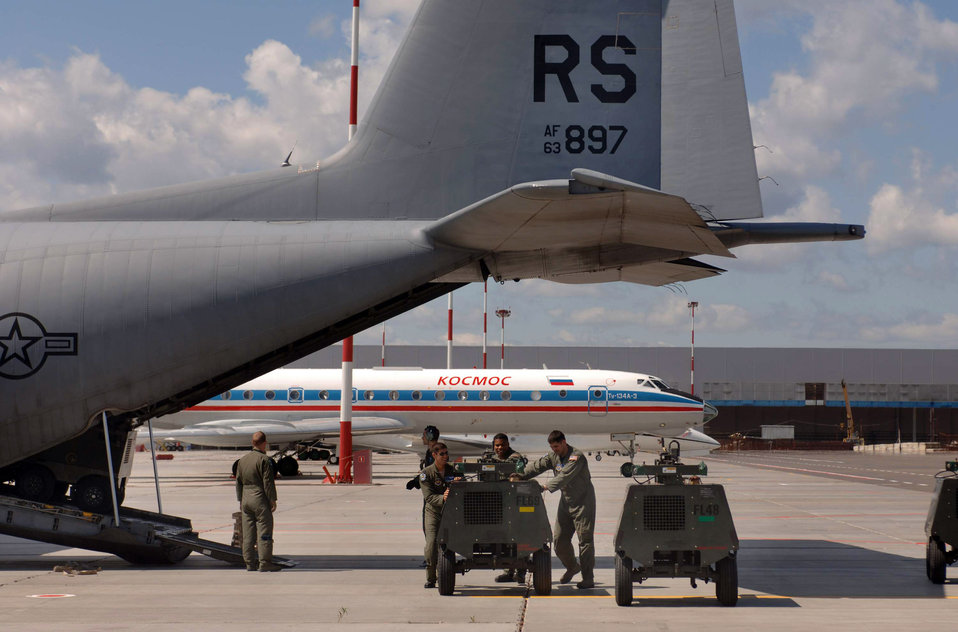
Airmen provide presidential support in Moscow

Portable light carts are unloaded from one of two C-130 Hercules aircraft in preparation for President Barack Obama's visit July 3 at Moscow's Vnukovo International Airport in Russia. The two C-130s are from the 37th Airlift Squadron from Ramstein Air Base, Germany.